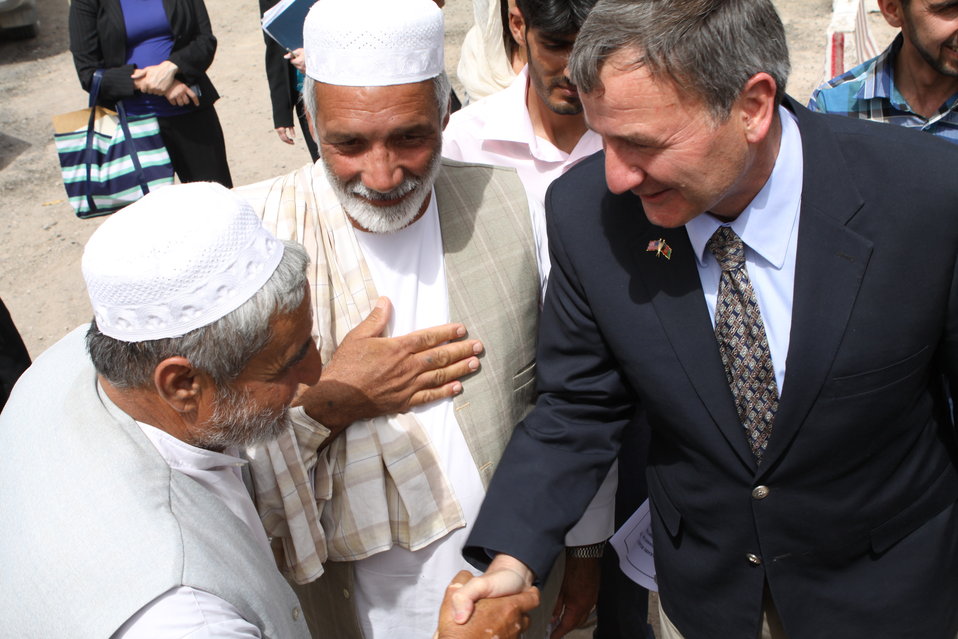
100525 Hirat Marble Conference 650